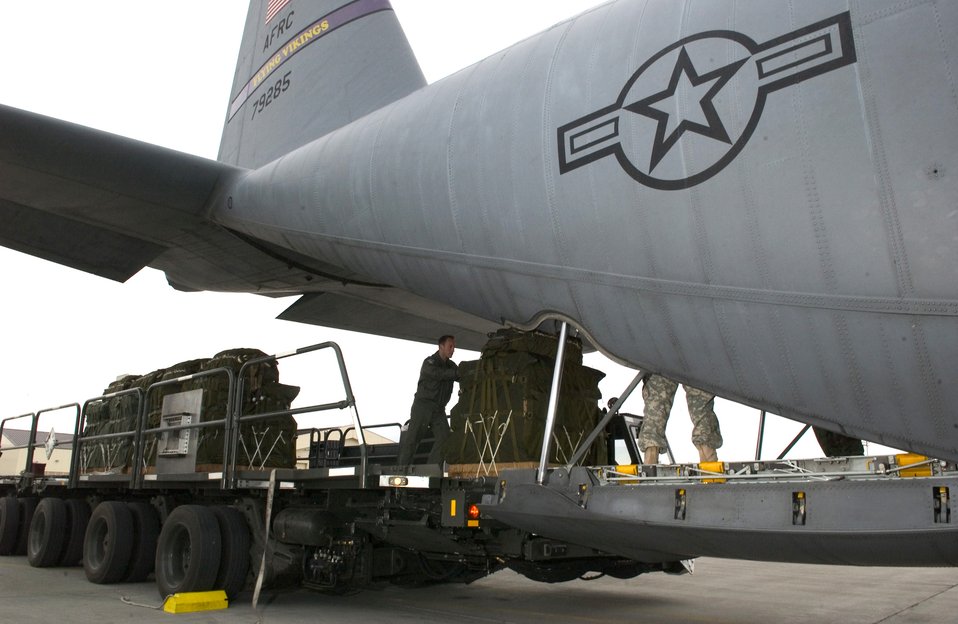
Reserve wing, Army unit join forces at Red Flag-Alaska

Master Sgt. Brad Cooper loads container delivery systems onto a C-130 Hercules at Elmendorf Air Force Base, Alaska, as part of Red Flag-Alaska 06-2 exercises on Friday, April 28, 2006. Sergeant Cooper is with the 96th Airlift Squadron at Minneapolis-St. Paul Joint Air Reserve Station, Minn.